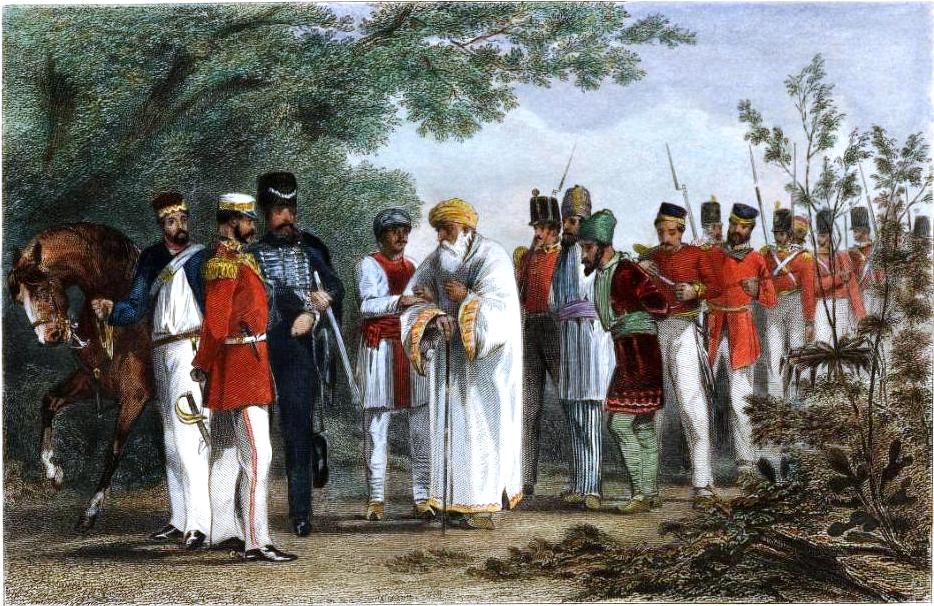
'Capture of the King of Delhi by Captain Hodson'